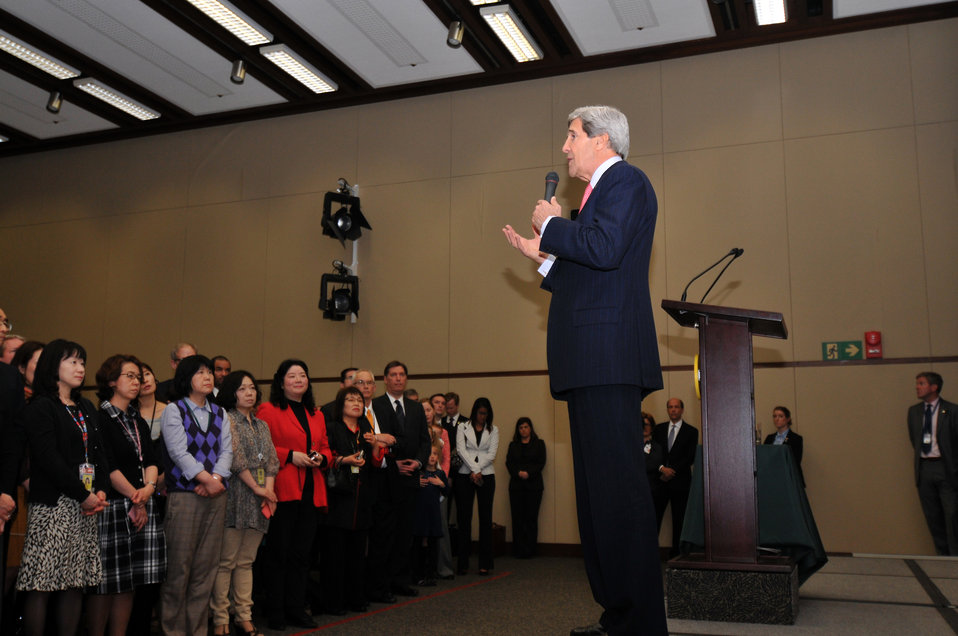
Secretary Kerry Addresses U.S. Embassy Staff in Tokyo

U.S. Secretary of State John Kerry addresses staff at the U.S. Embassy and five consulates in Japan in Tokyo, Japan, on April 15, 2013.